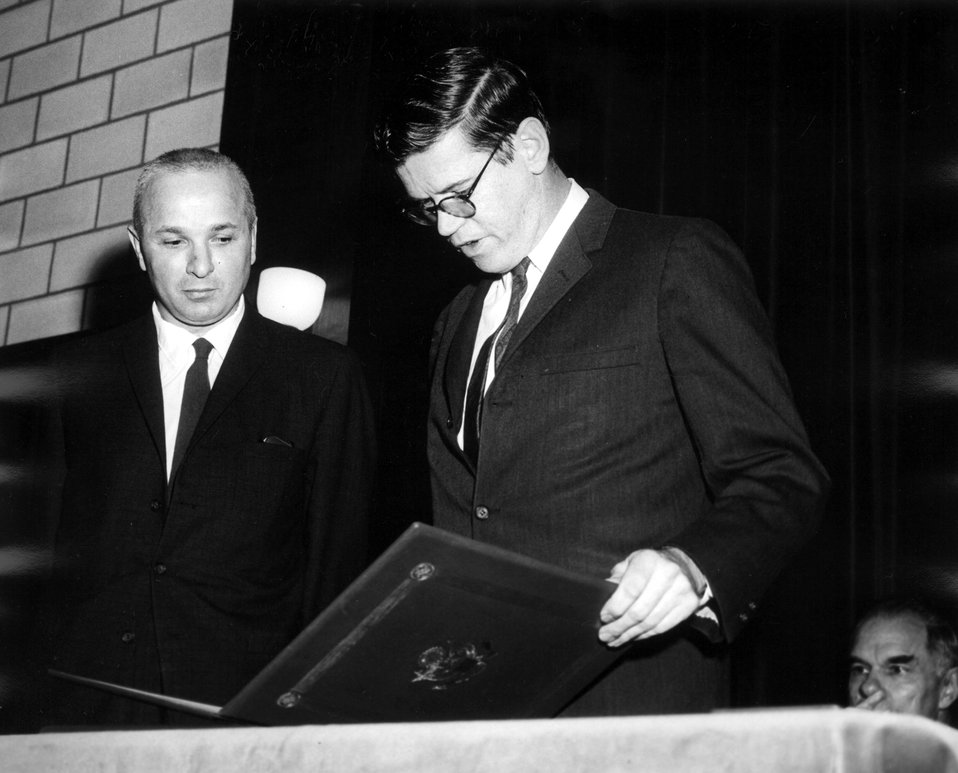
Lawrence Award, 1966.